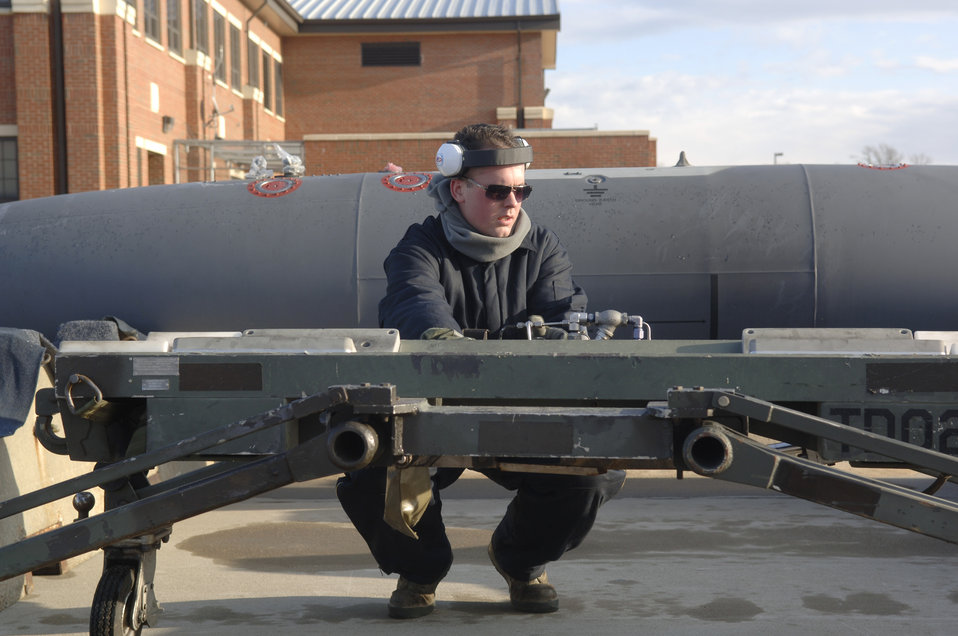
Langley Operational Readiness Exercise

Airman 1st Class Daniel Workman inspects munitions before loading them onto an aircraft during an operational readiness exercise Jan. 8, 2011, at Joint Base Langley Eustis, Va. The Air Force units on base tested their readiness ability to deploy cargo, aircraft and people within a limited time frame. Airman Workman is a weapons loader with the 1st Maintenance Squadron.